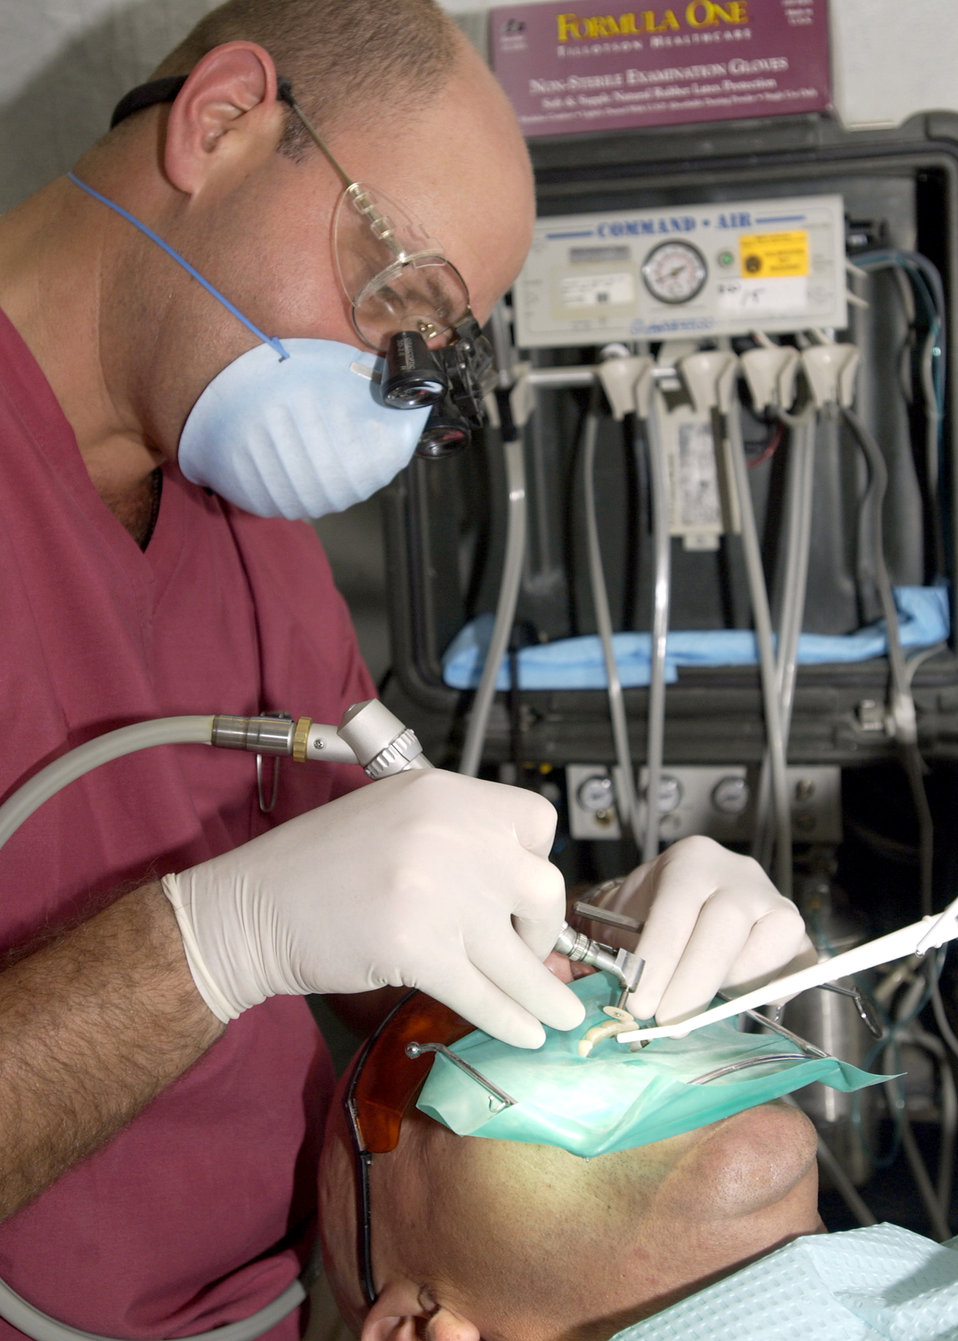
Say ah!

SOUTHWEST ASIA (AFPN) - Lt. Col. (Dr.) Douglas Risk begins a tooth restoration for Senior Master Sgt. Nor Gomez using a tooth-colored composite filling material. Dr. Risk is a dentist deployed to the 379th Expeditionary Medical Group.